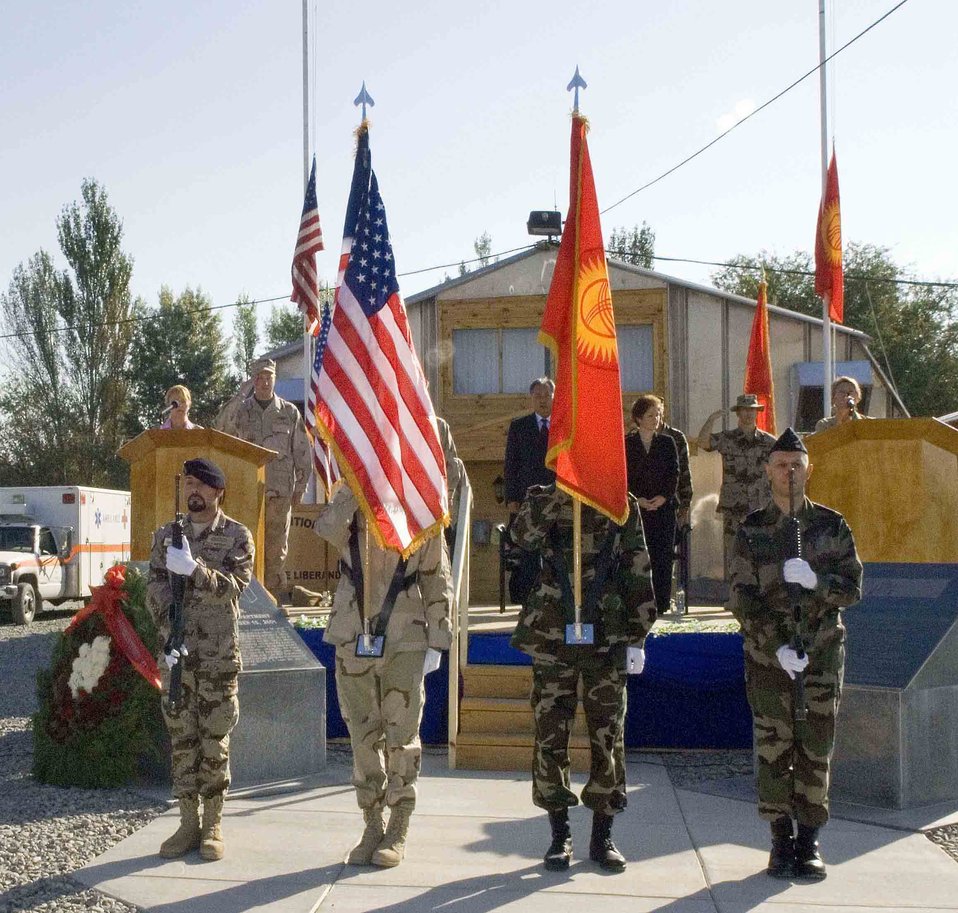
Manas Air Base hosts Kyrgyz president

Members from the 376th Air Expeditionary Wing, Kyrgyz, Spanish and French militaries perform color guard duties during a remembrance ceremony at Manas Air Base, Kyrgyzstan, Sept. 11.